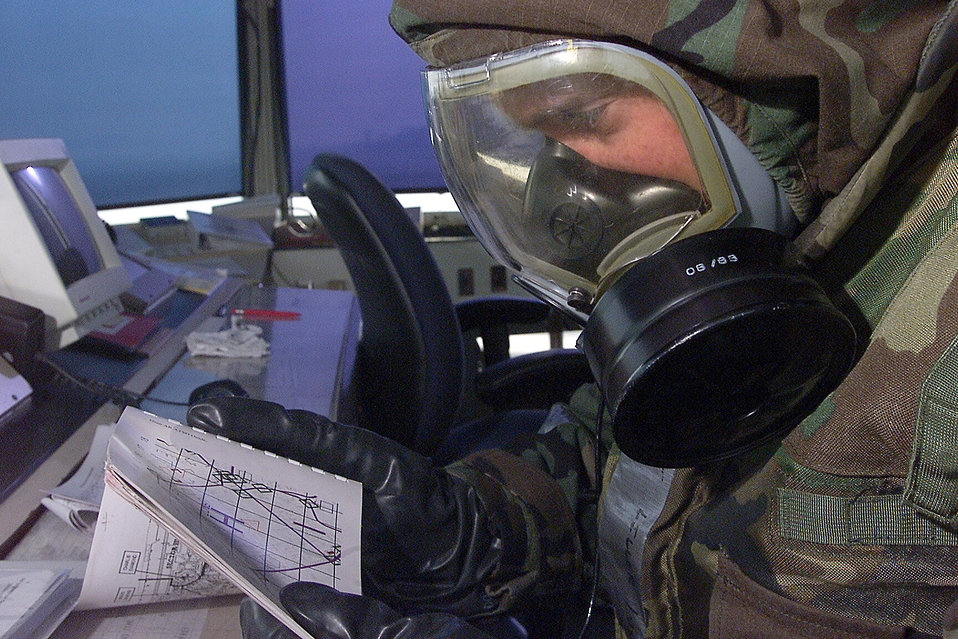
Survival guide

OSAN AIR BASE, South Korea -- Capt. John Liller verifies information from his base survival and operations guide during a chemical exercise here. He is assigned to the 25th Fighter Squadron.